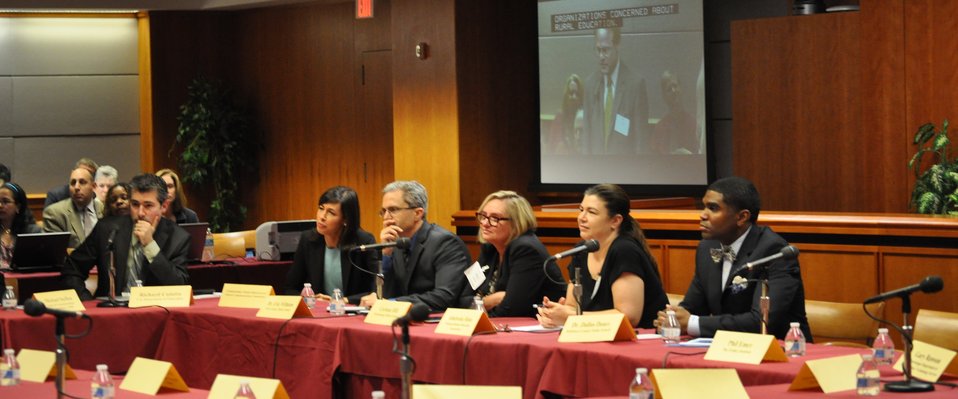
5.6.2014 E-Rate Modernization Workshop

Panel Discussion: Expanding Access to Wi-Fi for Schools and Libraries